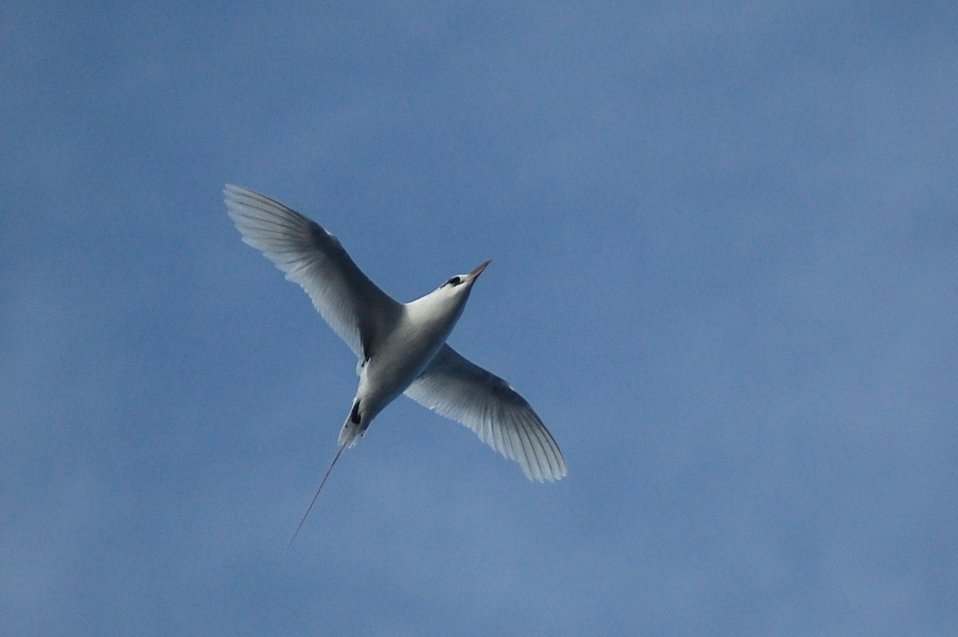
Tropic bird.